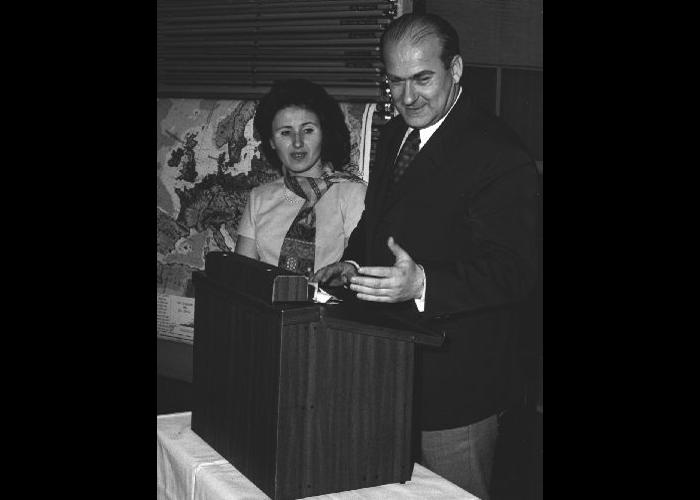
Minister of Health of Poland visits CDC.